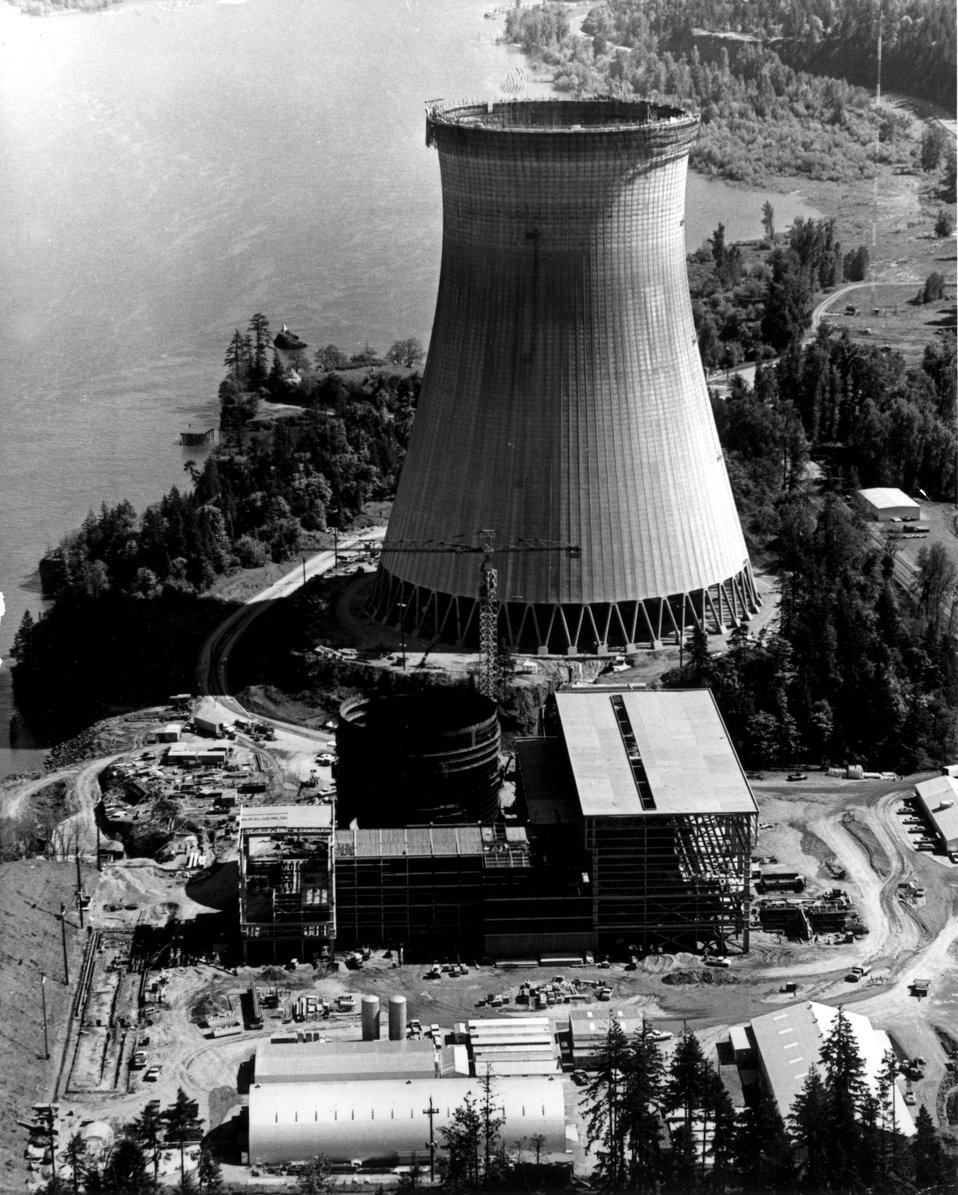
Trojan Nuclear Power Plant of the Portland General Electric Company near Prescott, Oregon, 42 miles northwest of Portland on the shores of the Columbia River. Circa 1972.